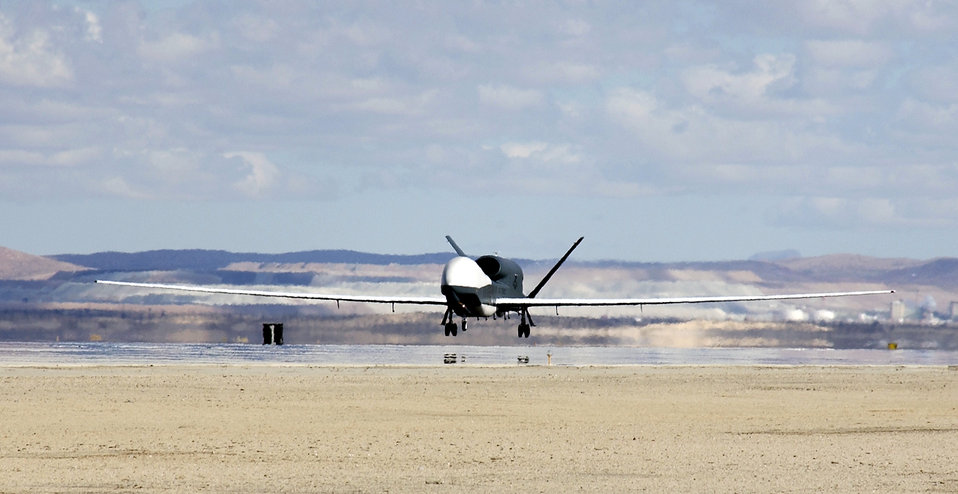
Global Hawk returns

EDWARDS AIR FORCE BASE, Calif. -- After supporting the Global War on Terror for three years, Global Hawk unmanned aerial vehicle number three (UAV-3) received its official homecoming today when its wheels touched down at 11:30 a.m. Pacific Time at Edwards Air Force Base, Calif.